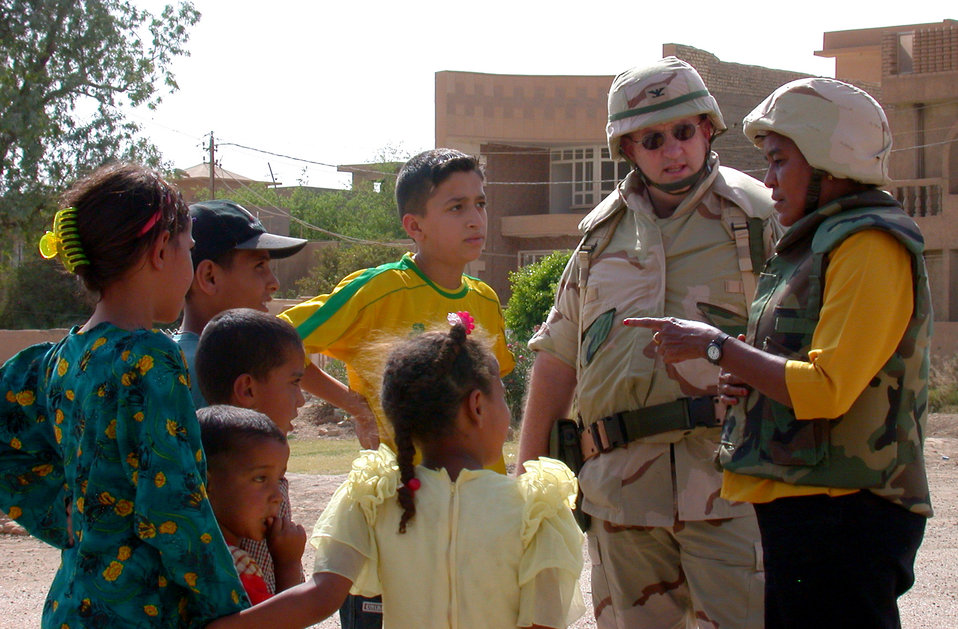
Talkin' their lingo

OPERATION IRAQI FREEDOM -- Awatif M. Sidahmed (right) translates for Iraqi school children and Col. Scott Harrison during their recent humanitarian mission in Baghdad. Sidahmed is a linguist assigned to the 380th Air Expeditionary Wing. Harris is the former vice commander of the unit.